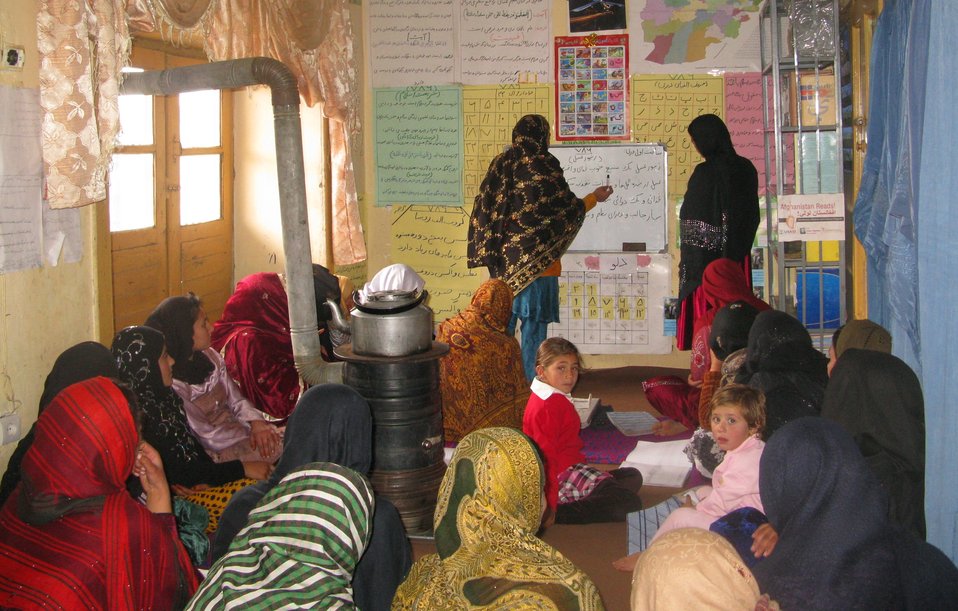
Female students in a rural village of Kabul province observe a student at the board as the teacher watches, in a home-based literacy class. Each AR! literacy classroom is equipped with a library, visible in the right hand corner.